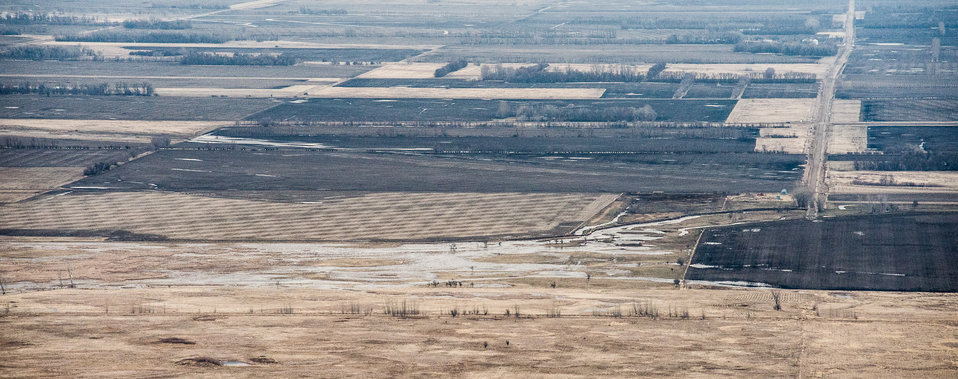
English Coulee Watershed Dam, a Public Law PL83-566 Small Watershed Program, in Grand Forks County, ND, on Tuesday, April 30, 2013. To learn about the Red River Basin Initiative, see www.mn.nrcs.usda.gov/news/features13/RRBI.html.